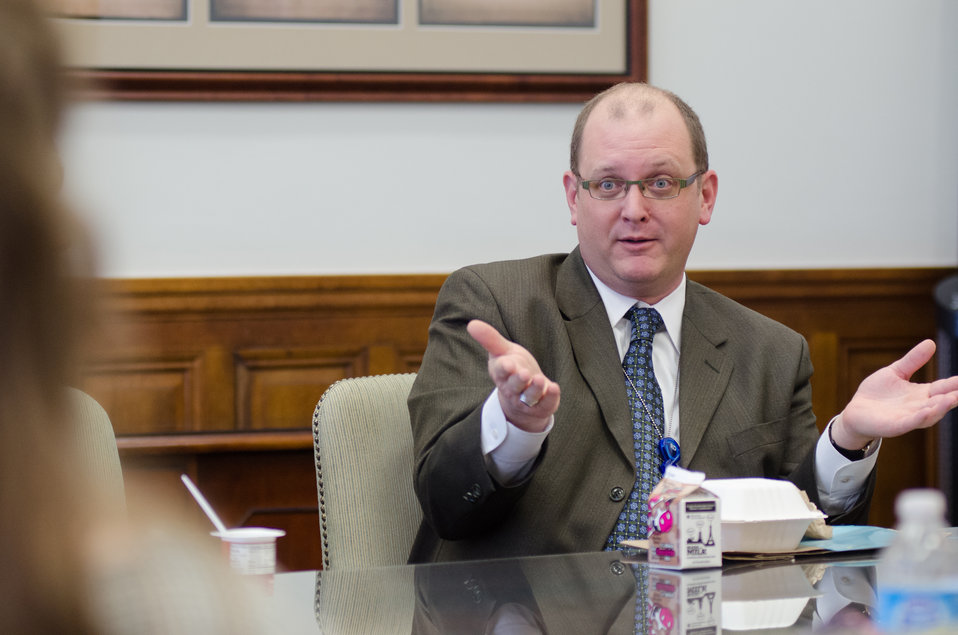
U.S. Department of Agriculture (USDA) Secretary Tom Vilsack, left listens to Office of Ethics Branch Chief Ed Peterman, to discuss the roles they play within the department, during a Brown Bag Lunch that Secretary Vilsack periodically has with employees, in his conference room, on Tuesday, April 9, 2013, in Washington, D.C.